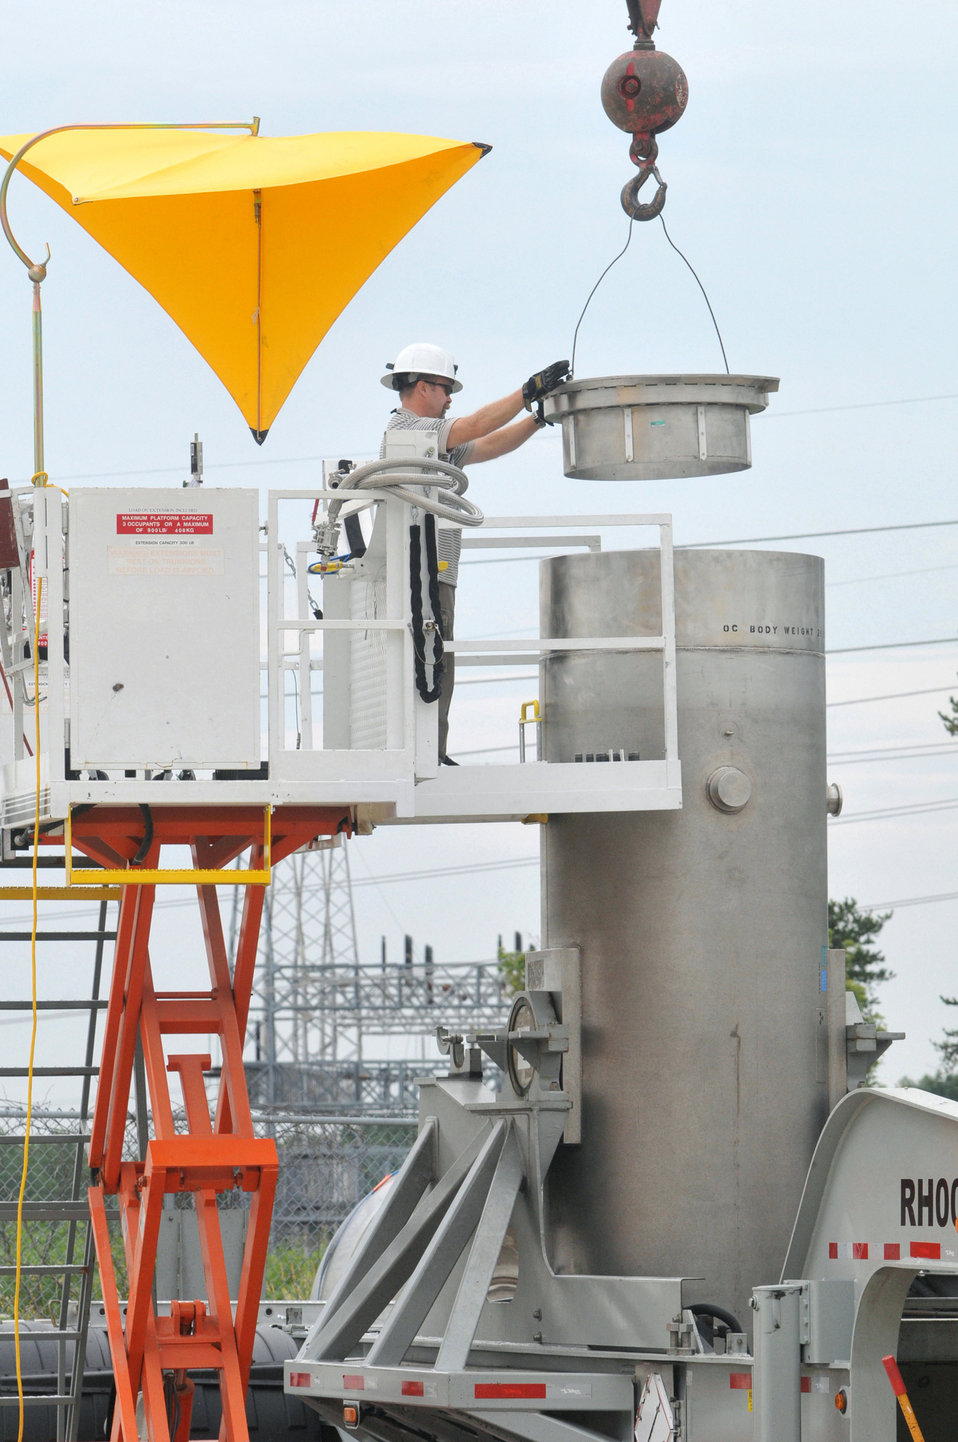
Brookhaven cleanup projects

Nearly $71 million in Recovery Act funds are putting Brookhaven National Laboratory (BNL) on track to wrap up several legacy environmental cleanup projects at two research reactors by September 2011.

The completion of the Recovery Act projects at BNL will end all EM legacy cleanup activities at the Lab.